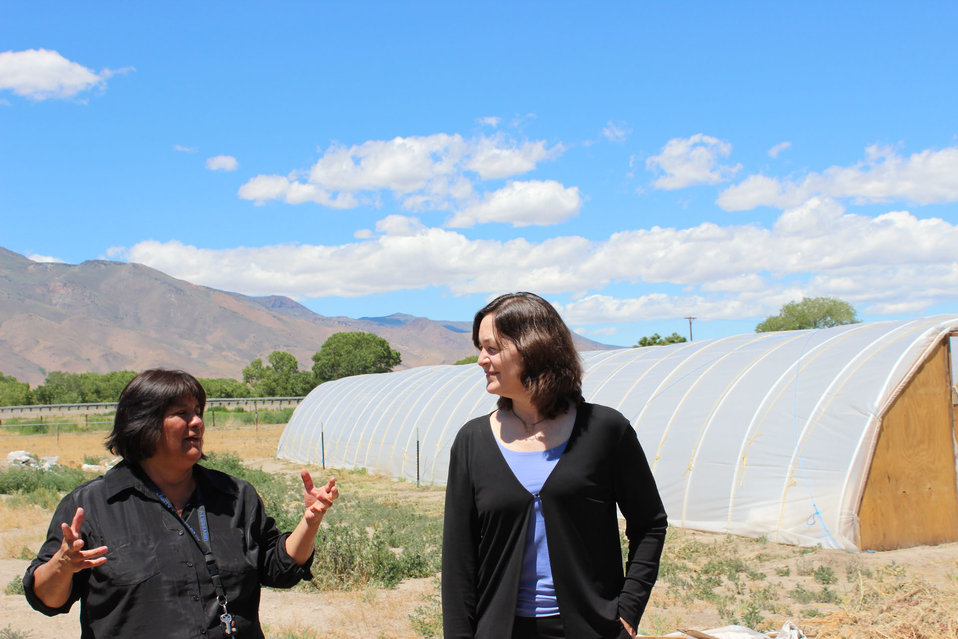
Wheelock Johns Pyramid greenhouse 062613

Pyramid Lake Paiute Tribal Administrator Della John and U.S. Department of Agriculture (USDA) Office of Tribal Relations (OTR) Director Leslie Wheelock stand in front of a hoop house operated by the Tribe.